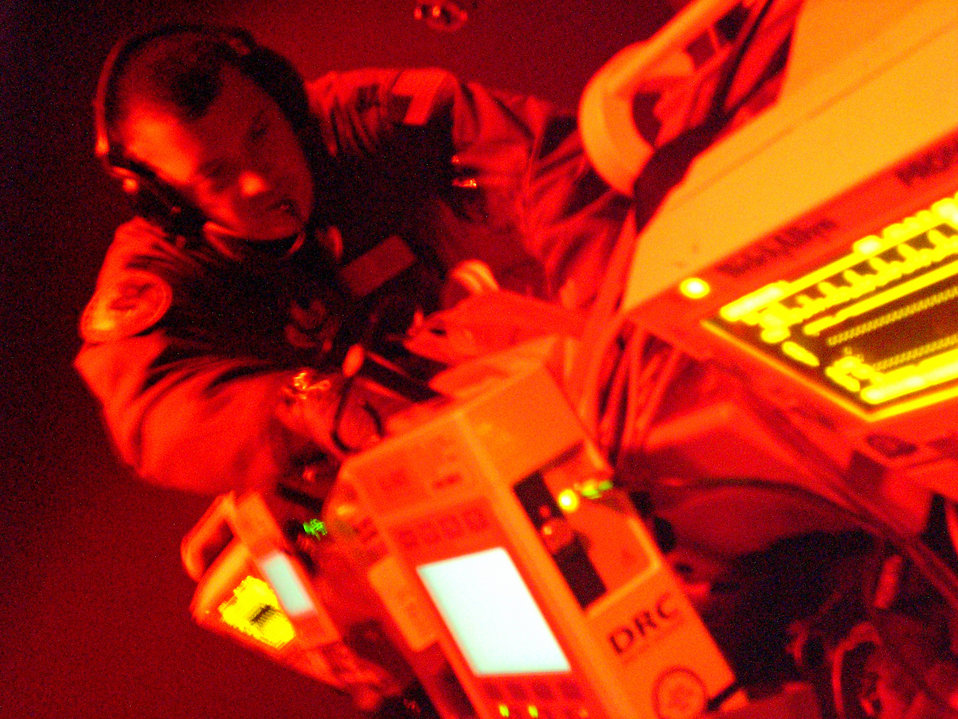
CSTARS trains Air Force trauma teams

Operating in the dim red glow simulating the back of a C-130 in flight, Capt. Derek Brumley checks equipment monitoring a critical care